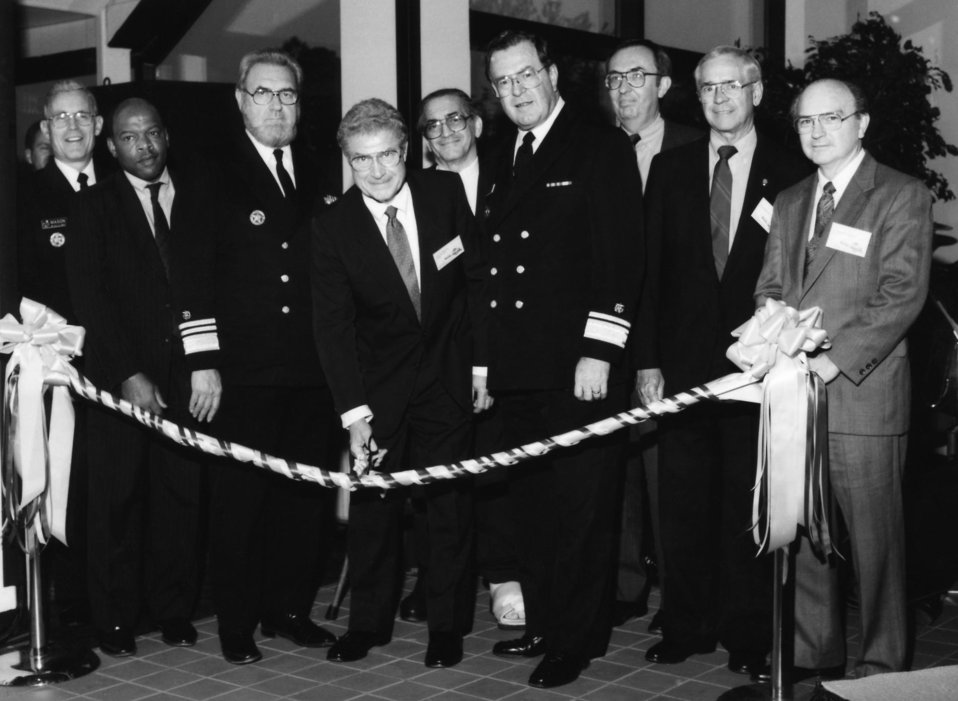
This 1987 photograph showed the dignitaries who'd participated in that year's Building 15 ribbon cutting ceremony, which took place on the Centers for Disease Control's Atlanta, Georgia Roybal Campus.